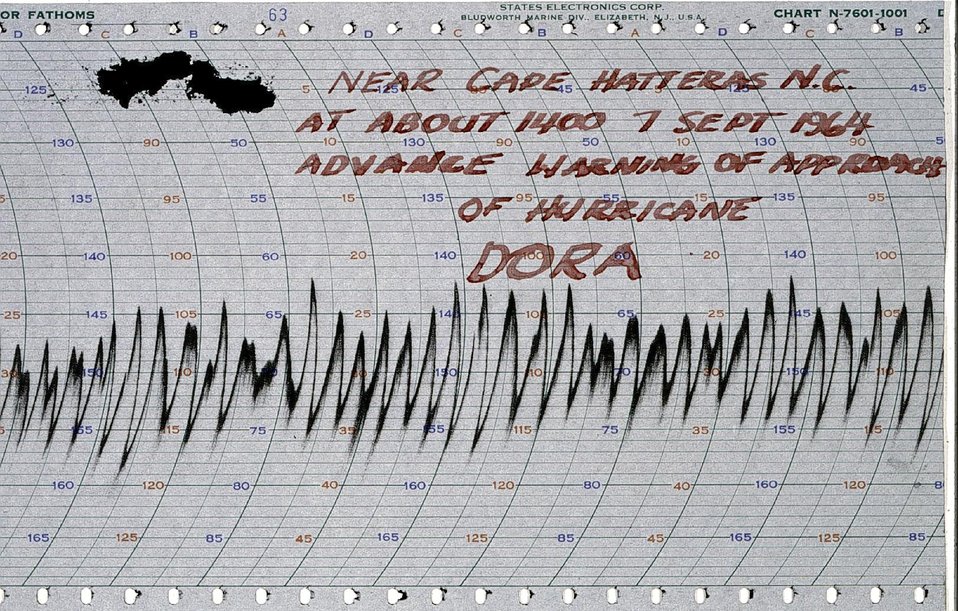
Fathogram showing swell from approaching hurricane. EXPLORER record from near Cape Hatteras. September 7, 1964 - Hurricane Dora